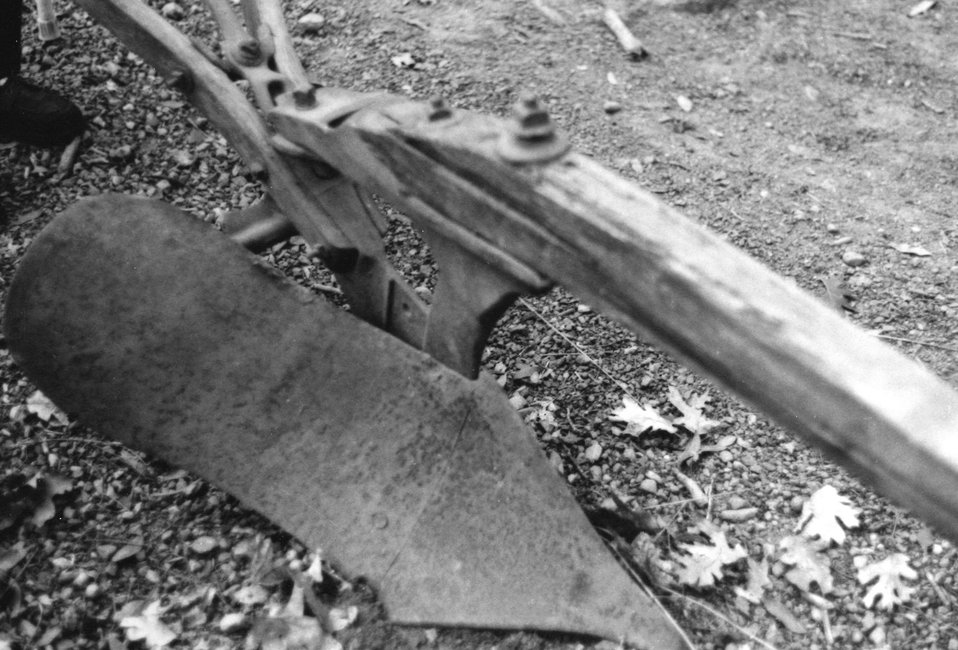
Old plow at Mule Creek